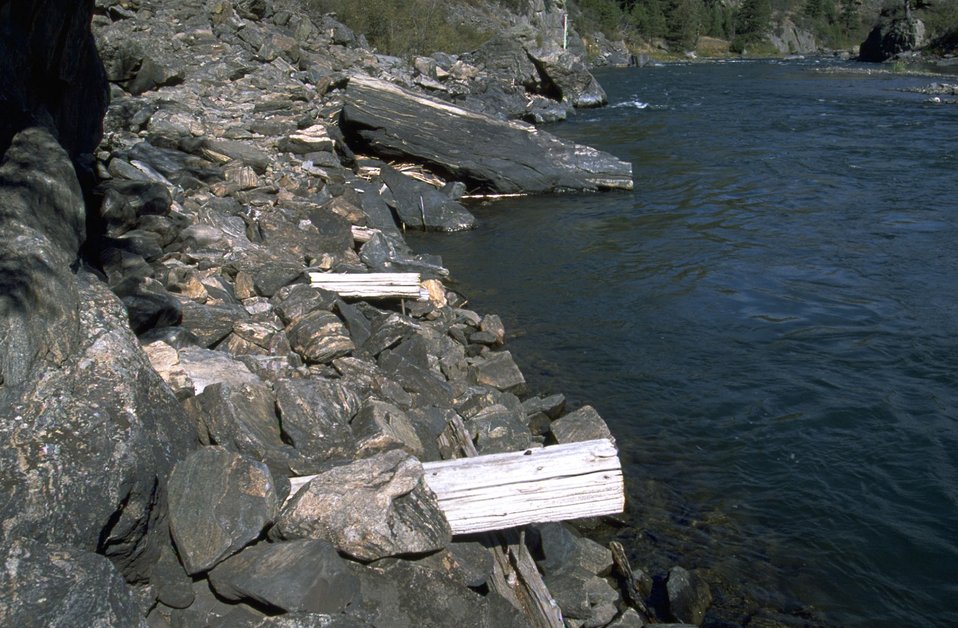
Shoreline of the Madison River